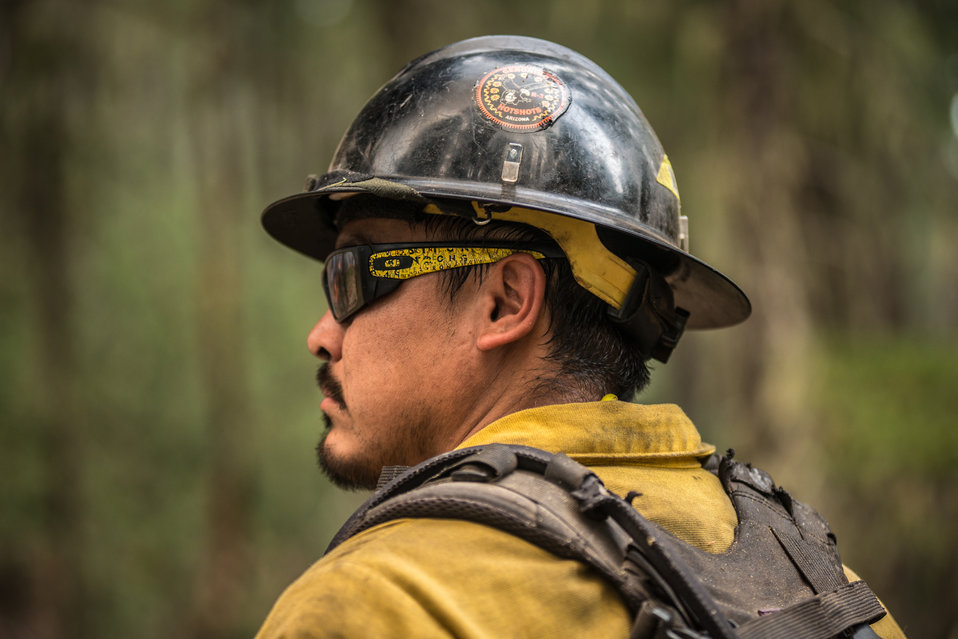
Geronimo Interagency Hotshot Crew, Department of the Interior (DOI) Indian Affairs (IA) Bureau of Indian Affairs (BIA) San Carlos Agency in Arizona; on assignment at the Big Windy Complex Wildlands Fire, approximately 15 miles west of Interstate-5 and East Northeast of Galice, Oregon, conducts a prescribed burn 'burnout' operation to help stop the main fire that may head toward this roadway, on Friday, Aug 9, 2013. The primary mission of the Interagency Hotshot Crews (IHC) is to provide a safe, organized, mobile and highly skilled hand crew for all phases of wildland fire suppression. The arduous duties and specialized assignments required of IHC personnel require uniform staffing, certification, training, equipment, communications, transportation, organization, and qualifications that adhere to interagency standards and guidelines.